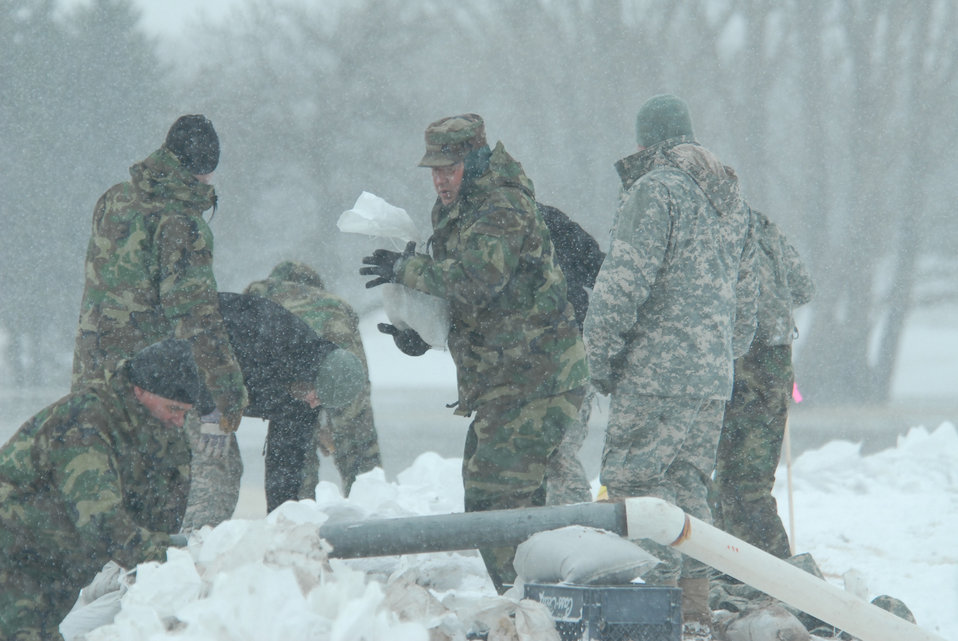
Holding back the flood

Master Sgt. Gregory Scott passes a sandbag to fellow Airmen March 25 in Fargo, N.D. The sandbags are being placed on top of a dike to block the rising waters of the Red River along the North Dakota-Minnesota border. Sergeant Scott is from Grand Forks Air Force Base, N.D.